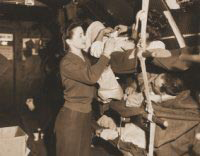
Captain Lillian Kinkella Keil

1950's -- In 1938, Lillian Kinkella Keil's mother thought her daughter might like to be one of a brand new group of women, called